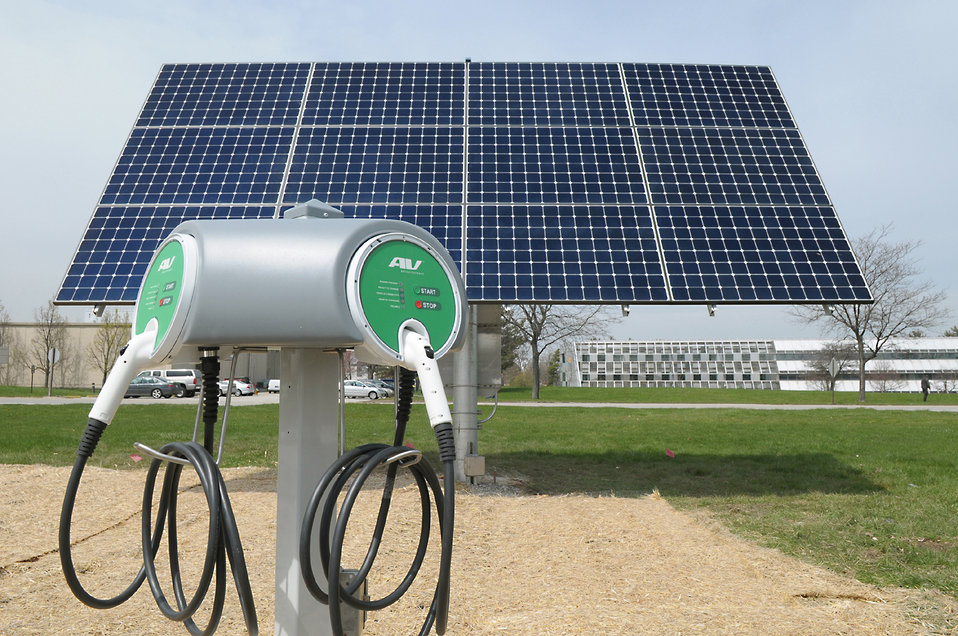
Shown is a charge station at the Argonne National Laboratory.
At ANL, employees can charge their electric vehicles from a unit that is powered by the sun.